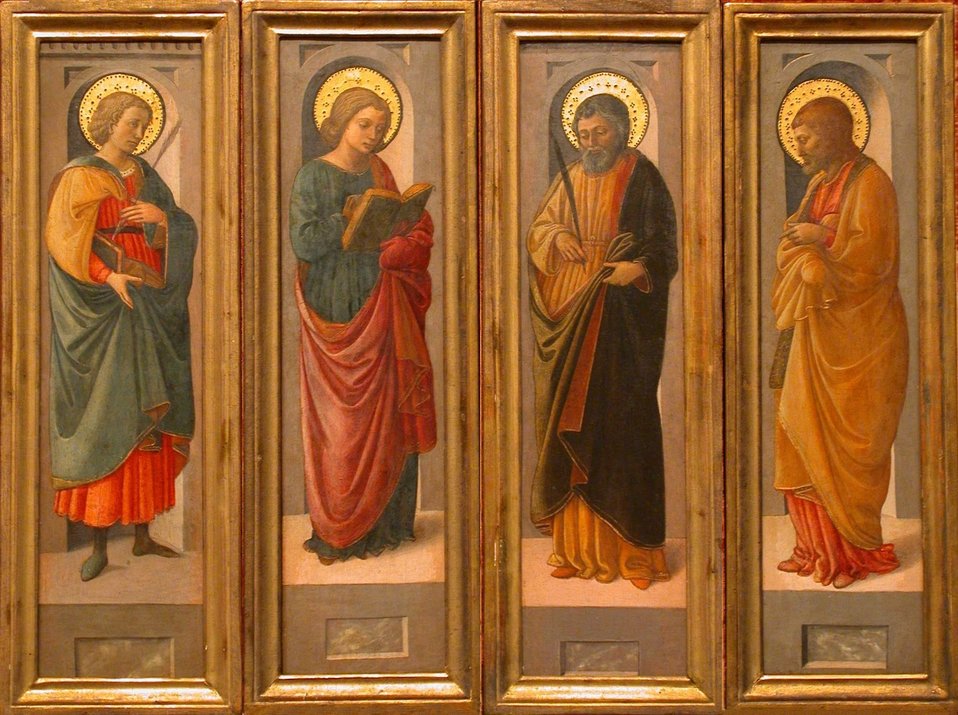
'Four Male Saints, paintings by Fra Diamante, c. 1470, Honolulu Academy of Arts